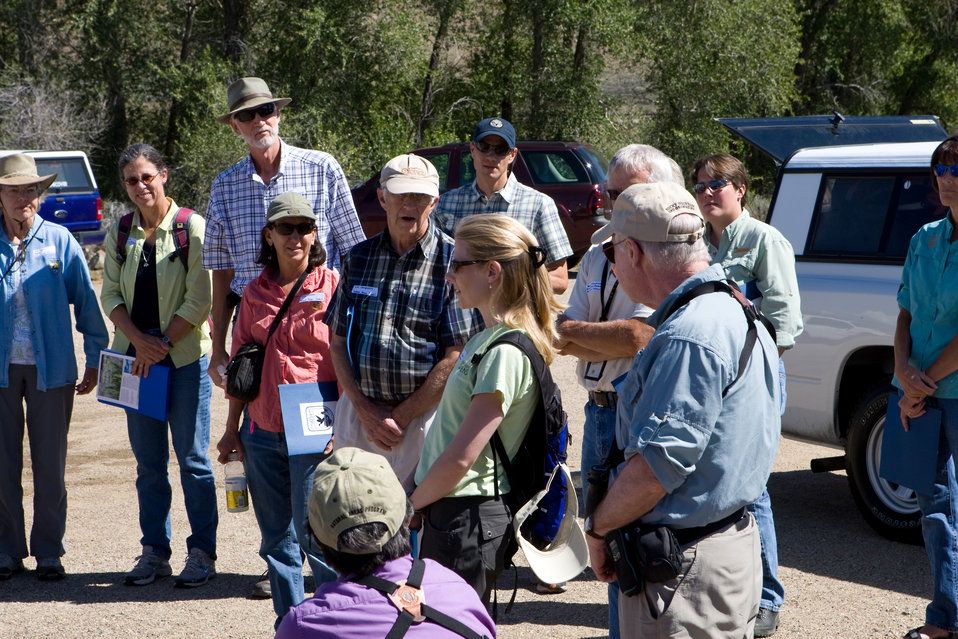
Colorado Rare Plant Conservation Initiative

The Colorado Rare Plant Conservation Initiative (RPCI) is a partnership of 23 statewide and regional agencies, private organizations, and academic institutions working to conserve 121 rare plants in Colorado. As part of these efforts the group developed the Colorado Rare Plant Conservation Strategy, developed Best Management Practices to reduce energy development impacts, addressed climate change, and developed focused strategies for the conservation of individual species at eight priority landscapes. The group has also worked to coordinate volunteer efforts for plant conservation across the state.